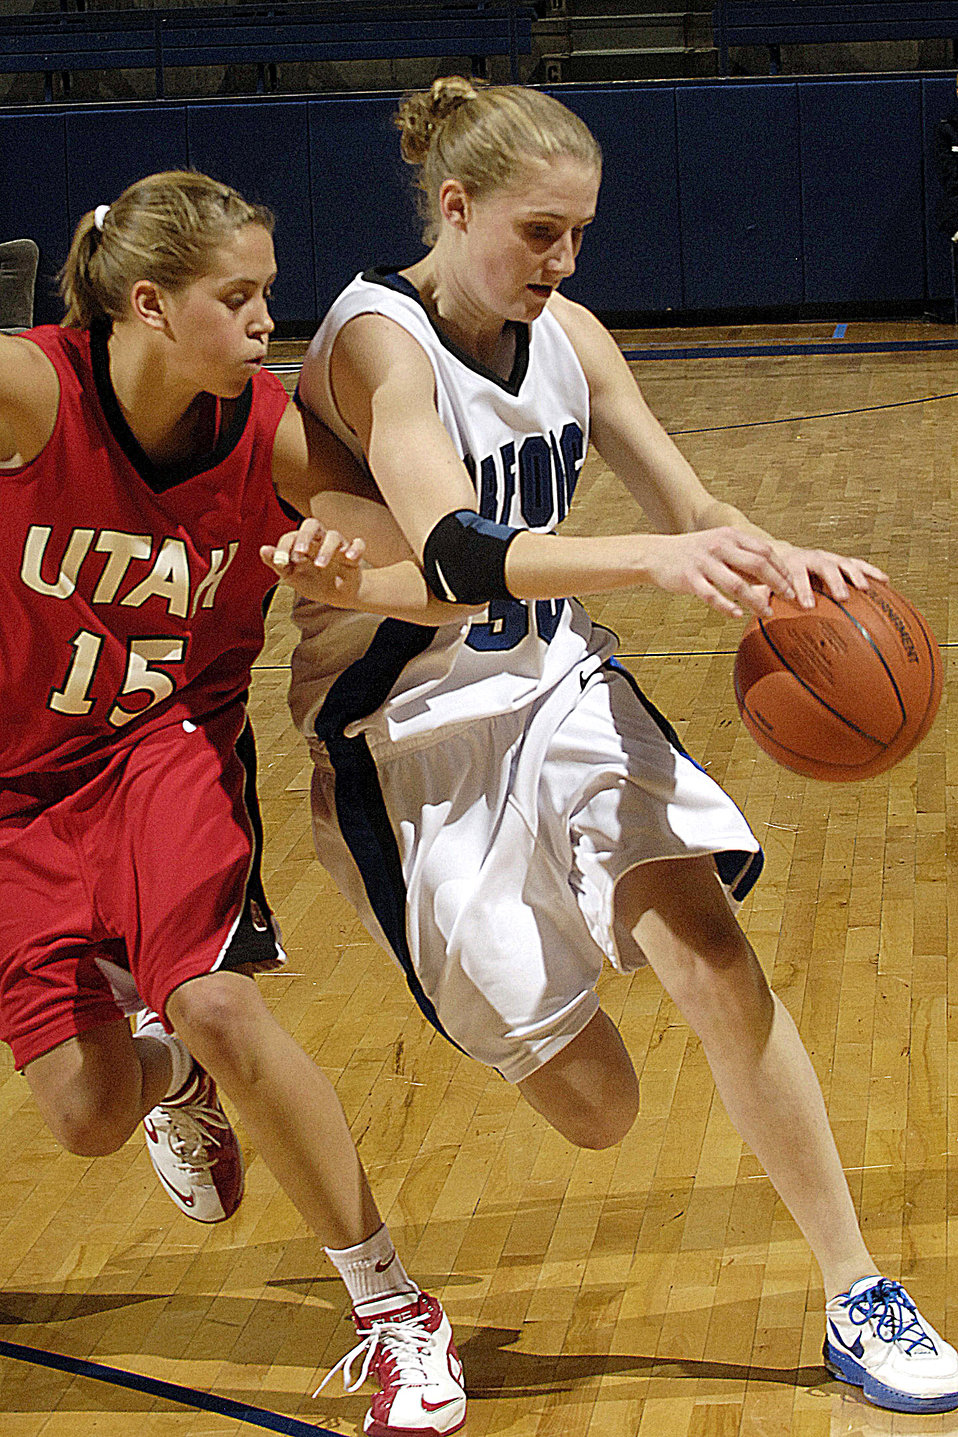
Lady Falcons fall to Utah

U.S. Air Force Academy Falcon senior guard Pamela Findlay drives toward the basket during the 60-50 loss against Utah Jan. 9 in Clune Arena at Colorado Springs, Colo. Findlay scored 11 points on four-of-nine shooting.